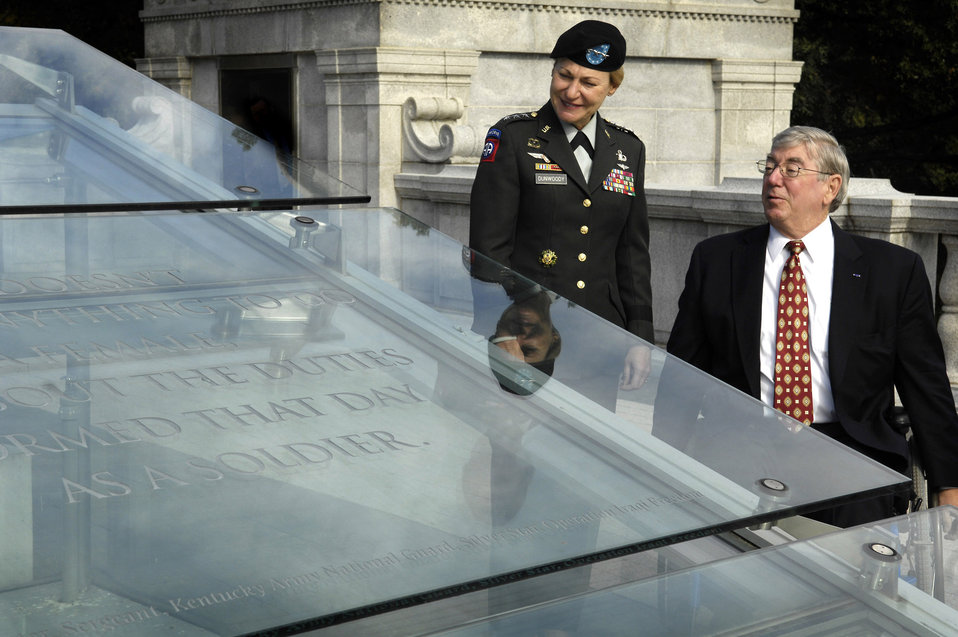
President nominates woman Army general for fourth star

Lt. Gen. Ann E. Dunwoody and Secretary of Veterans Affairs Gordon H. Mansfield tour the Women's Memorial at Arlington National Cemetery, Va., November 2007. Currently, General Dunwoody serves as the U.S. Army Deputy Chief of Staff for Logistics. President George W. Bush nominated her for the rank of four-star general and the commander of Army Material Command June 23.